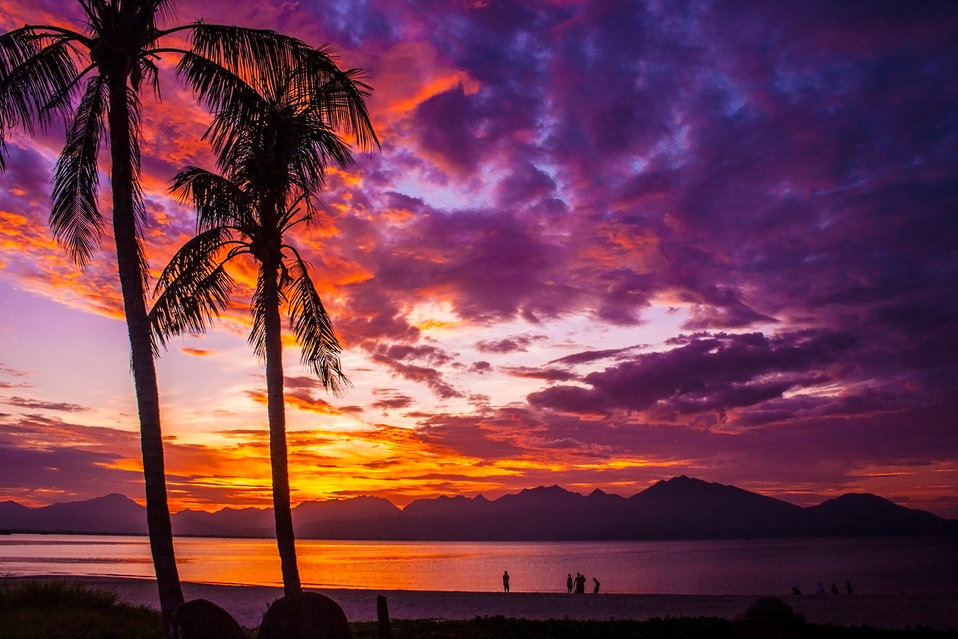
Sunset #4

Sunset on the bay of danang, central vietnam..